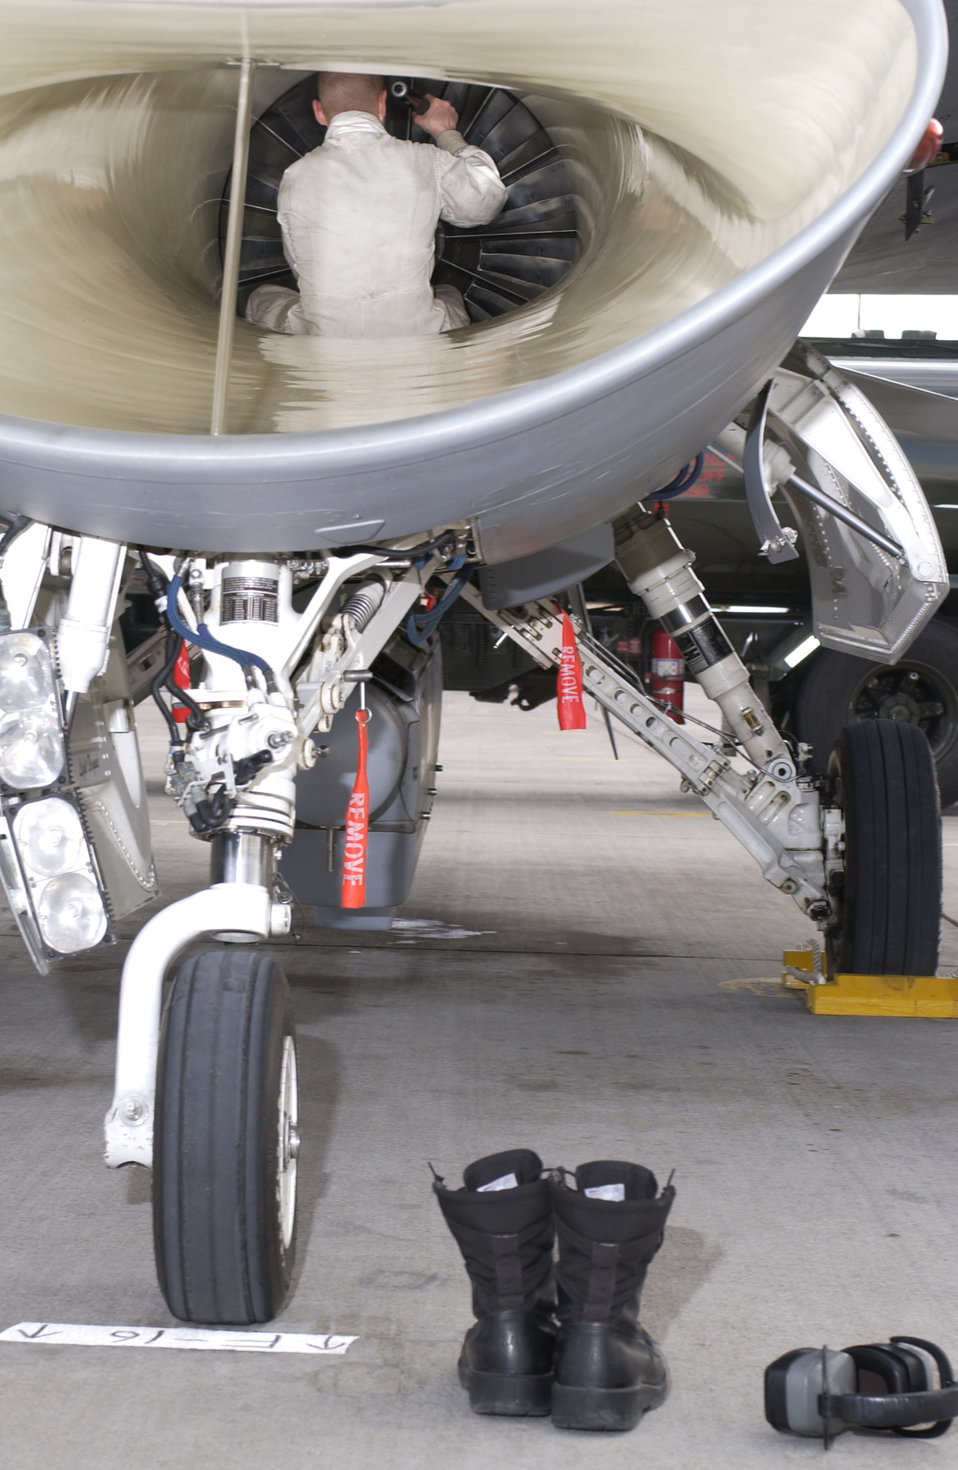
Flying the flag

NELLIS AIR FORCE BASE, Nev. -- Staff Sgt. Neal Dozier inspects the air intake on an F-16 Fighting Falcon here. About 10,000 U.S. and coalition forces are participating in the exercise, which runs through April 2. Sergeant Dozier is a crew chief with the 27th Aircraft Maintenance Squadron at Cannon Air Force Base, N.M.